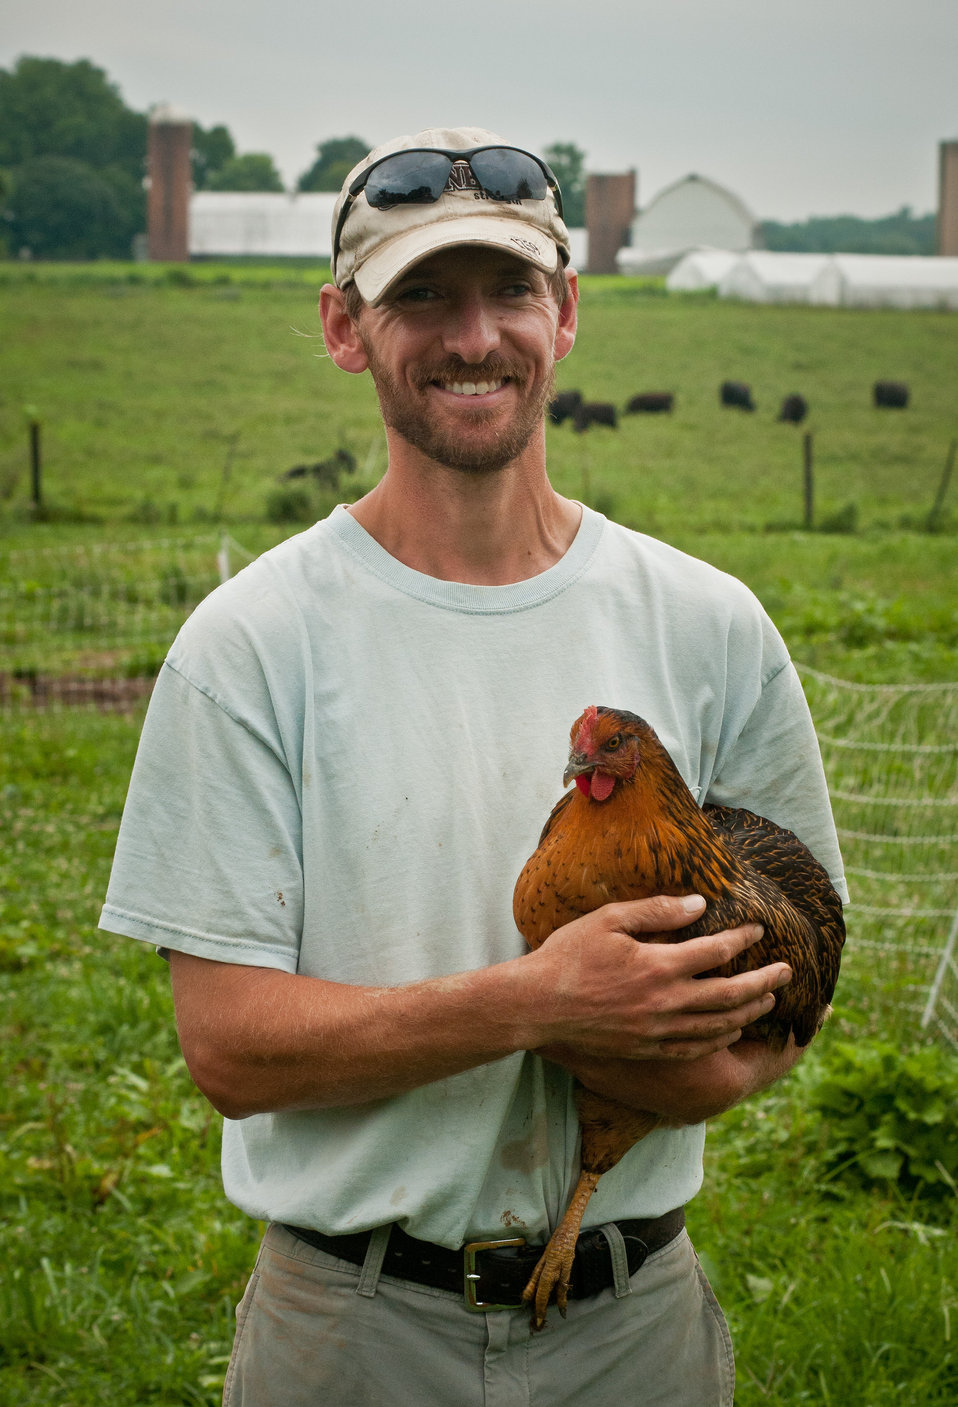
Farm assistant George Kloph holds a laying hen at Nick’s Organic Farm, in Adamstown, MD, on Friday, July 12, 2013. The fence helps keep predators away from the chickens. Discarded horse trailers have been repurposed as coops with nests on the side that allow for easy egg harvesting. The farm, owned by Nick Maravell, produces Black Angus beef, chicken, turkey, eggs, hay, soybeans, corn, alfalfa, orchard grass, rye; and other crops. The cattle are100% grass-fed receiving certified organic pasture, certified organic hay (in winter), water and mineral salts mixed with sea kelp. The cattle are not fed hormones, antibiotics or animal products. Poultry feed from grain is ground from organic grain. The poultry also graze on organic pastures. The farm has conducted on-farm research with federal, state and non-profit agencies to refine organic practices.